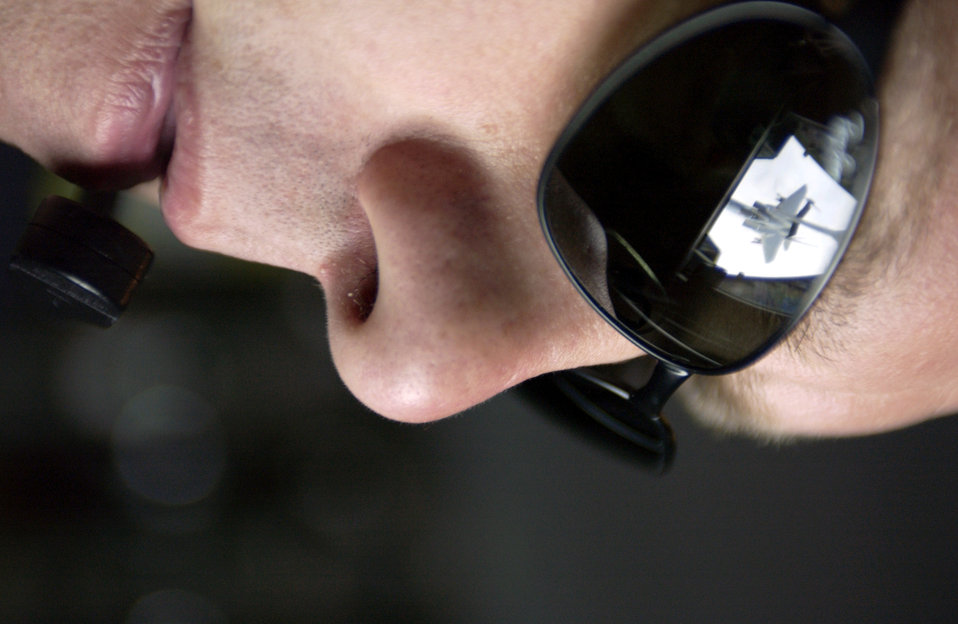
An eye for refueling

OVER EIELSON AIR FORCE BASE, Alaska -- Senior Airman Tim Brady refuels an F-15C Eagle from a KC-10 Extender during operation Cooperative Cope Thunder here July 23. Airman Brady is a boom operator with the 76th Air Refueling Squadron at McGuire Air Force Base, N.J., and the F-15 is assigned to the 18th Fighter Wing at Kadena Air Base, Japan.